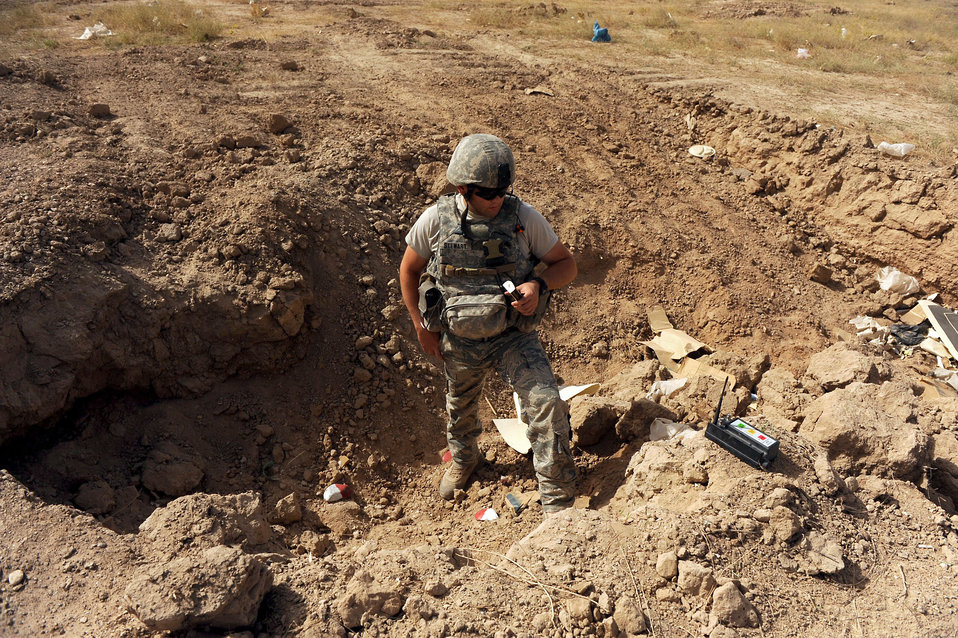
Explosive ordnance Airmen clear the way for Afghan National Army

Staff Sgt. Benjamin Stewart places C-4 explosives to destroy M-42 bomblets June 4, 2010, in Kandahar City, Afghanistan. Airmen from the 755th Air Expeditionary Squadron, Operating Location-Bravo explosive ordnance disposal team are making a difference by clearing bombs from land near Kandahar Airfield to help make it safe for a future regional military training center site for the Afghan National Army.